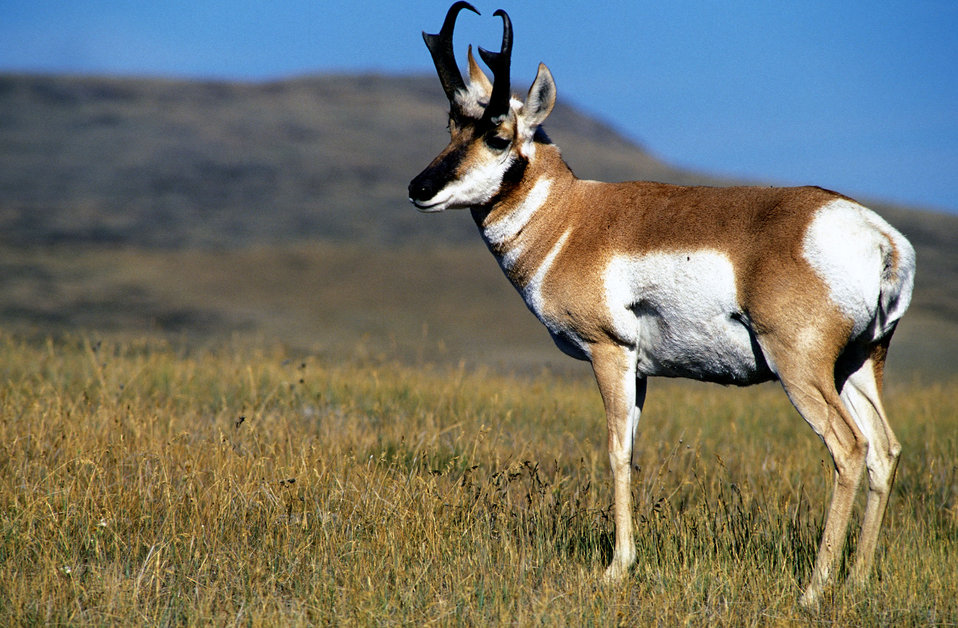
Pronghorn

CMR National Wildlife Refuge was established, in part, for pronghorn antelope.